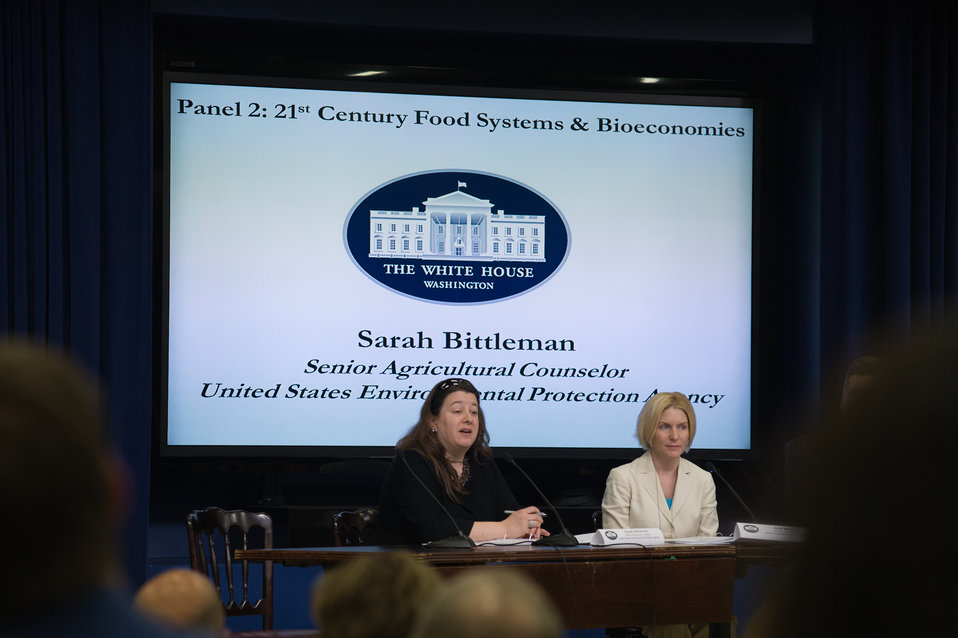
U.S. Environmental Protection Agency (EPA) Senior Agricultural Counselor Sarah Bittleman speaks, at the Innovation Center For U.S. Dairy Sustainability Council Meeting on Wednesday, Apr. 24, 2013, at the White House, in Washington, D.C.